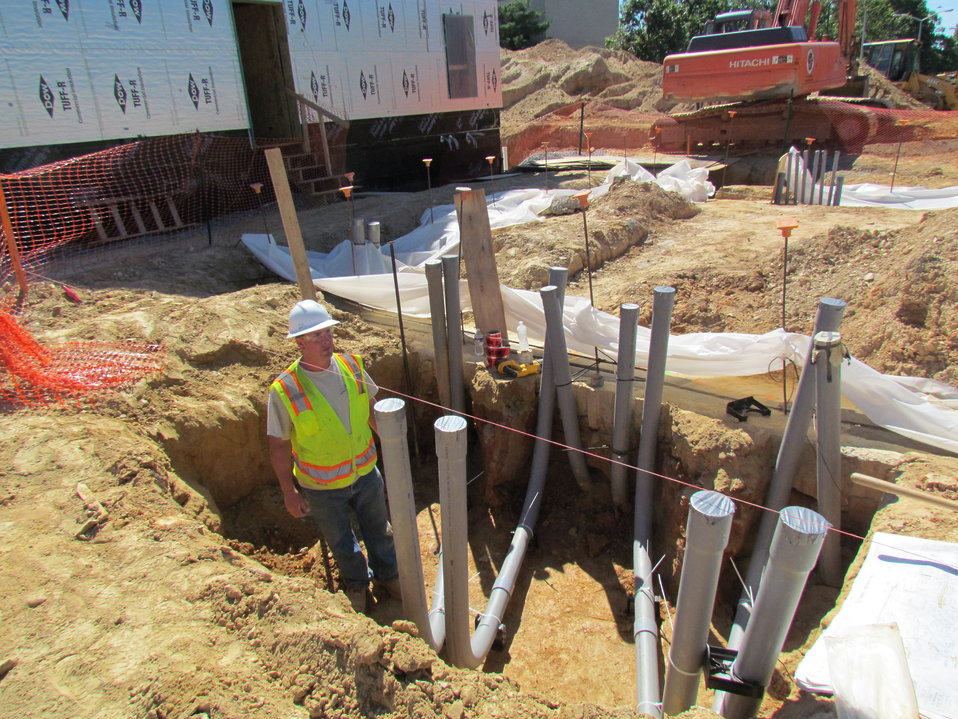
Net-Zero Energy Residential Test Facility - Photo showing placement of various conduits associated with garage.